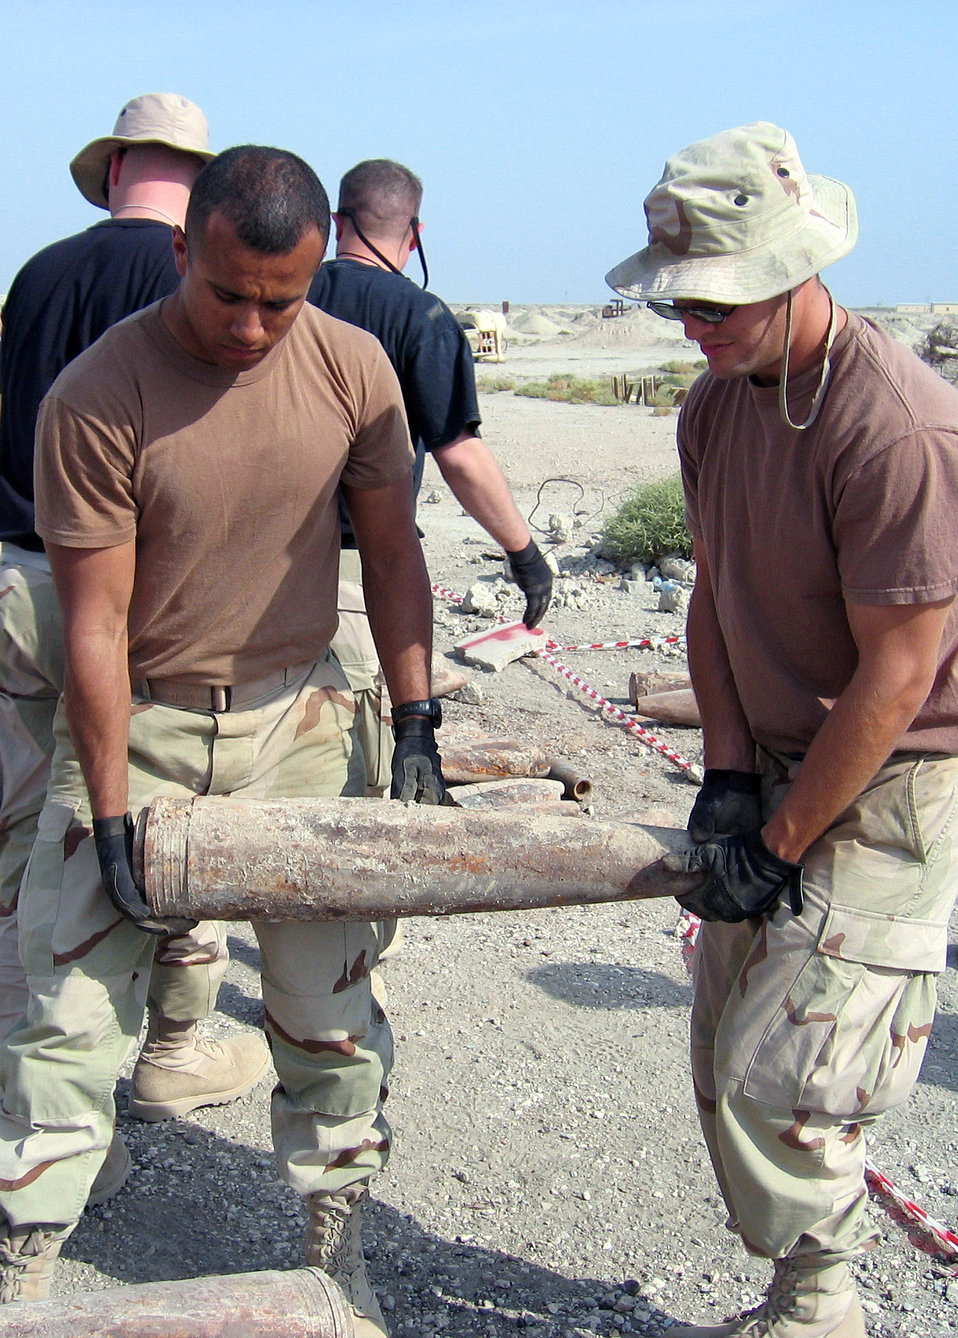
Big bang

IRAQ (AFPN) -- Airman 1st Class Jorge Fernandez (left), Staff Sgt. Zach Terry and other volunteers move ordnance to Ali Base, Iraq. Both Airmen are assigned to the 407th Expeditionary Logistics Readiness Squadron.